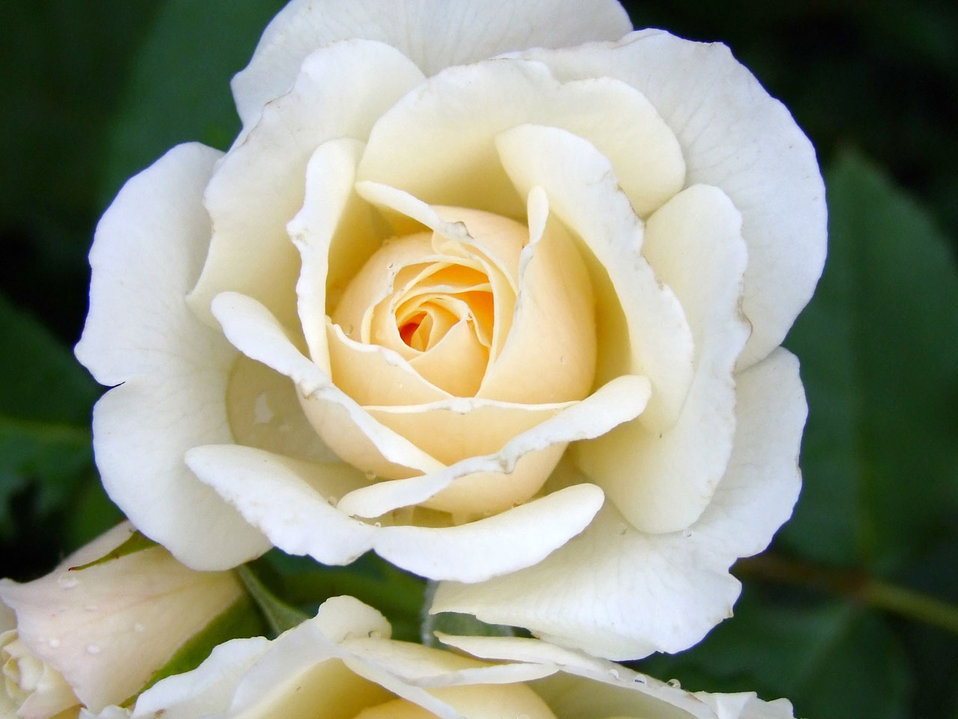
Rose

Beautiful rose in the evening.